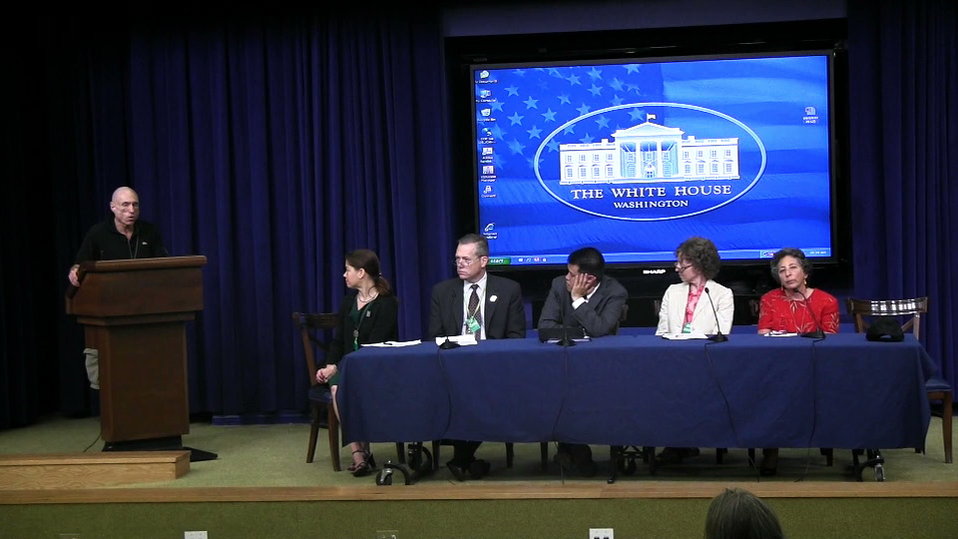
WHDpanel6